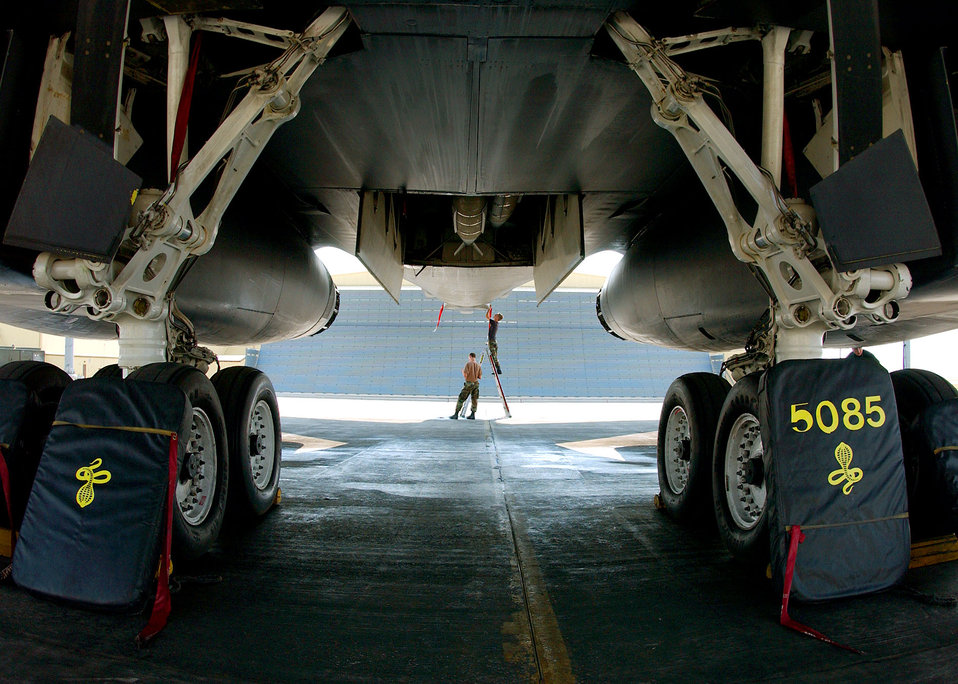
Lancer landing gear

ELLSWORTH AIR FORCE BASE, S.D. -- Airmen of the 28th Aircraft Maintenance Squadron here prepare a B-1 Lancer for deployment. Ellsworth aircraft and airmen are deploying to support operations Enduring Freedom and Iraqi Freedom.